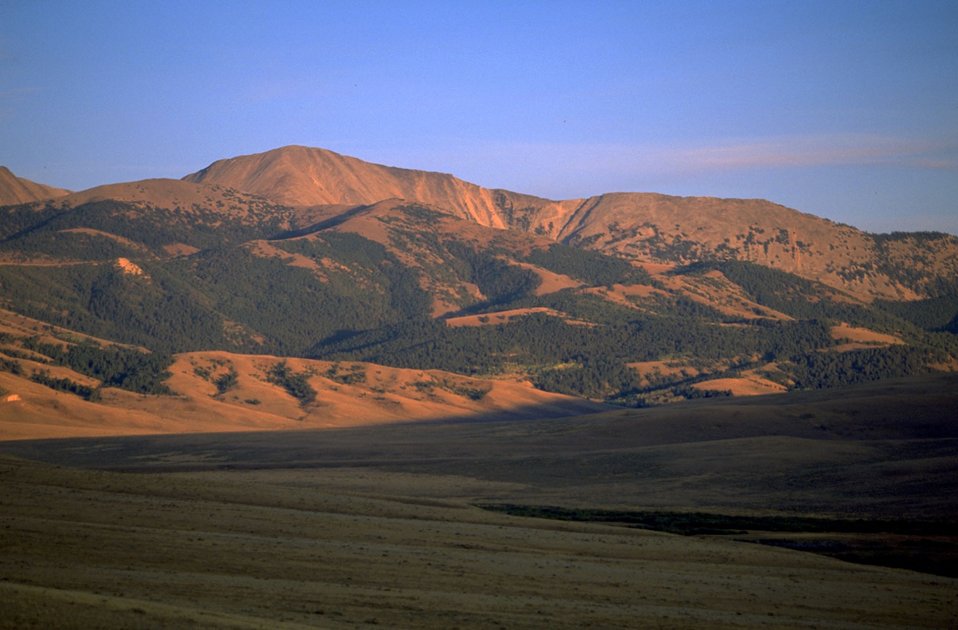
Partially shaded hillside with mountains in the background